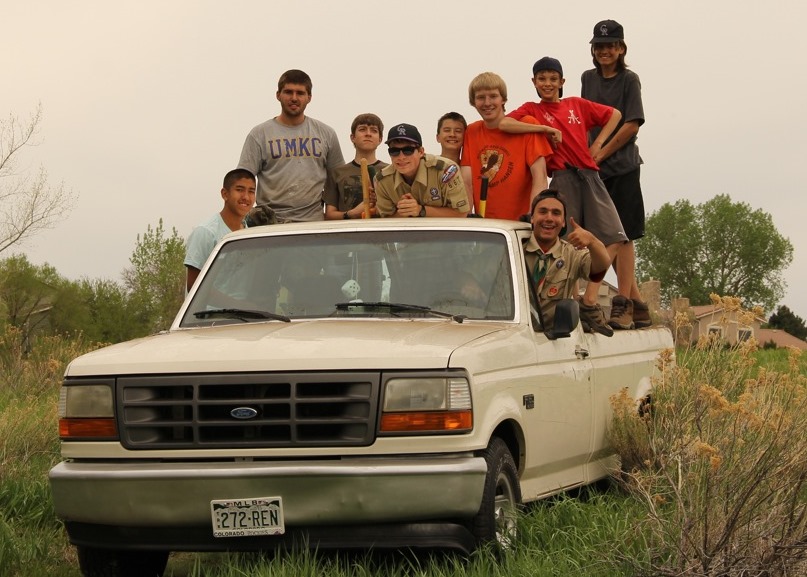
Eagle Scout - Trail Crew